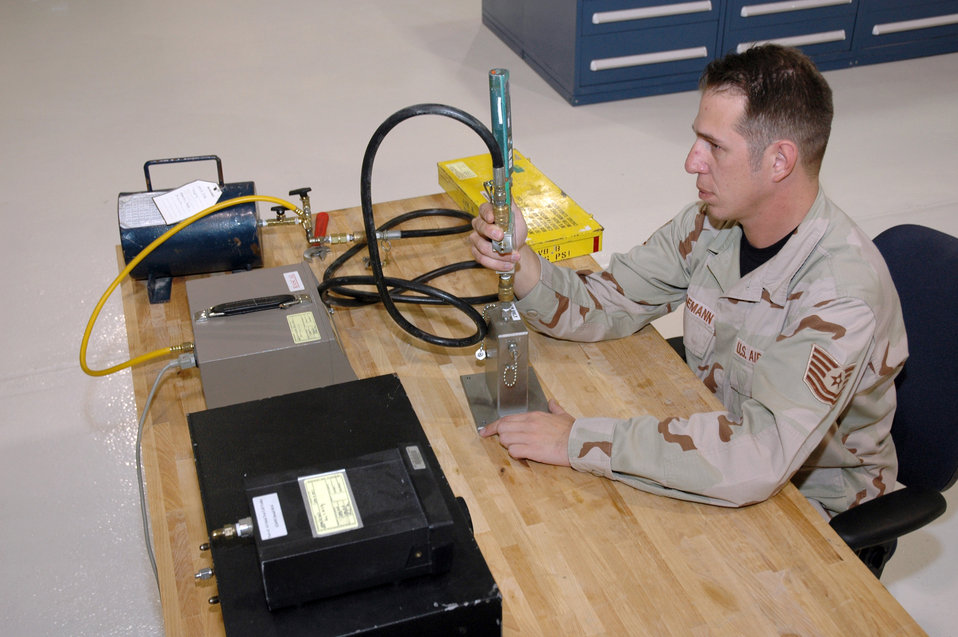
PMEL Airmen ensure equipment is serviceable

SOUTHWEST ASIA (AFPN) -- Tech. Sgt. Mike Krogemann performs a quality review evaluation of a tire inflator kit. He is a precision measurement equipment laboratory technician with the 379th Expeditionary Maintenance Squadron.